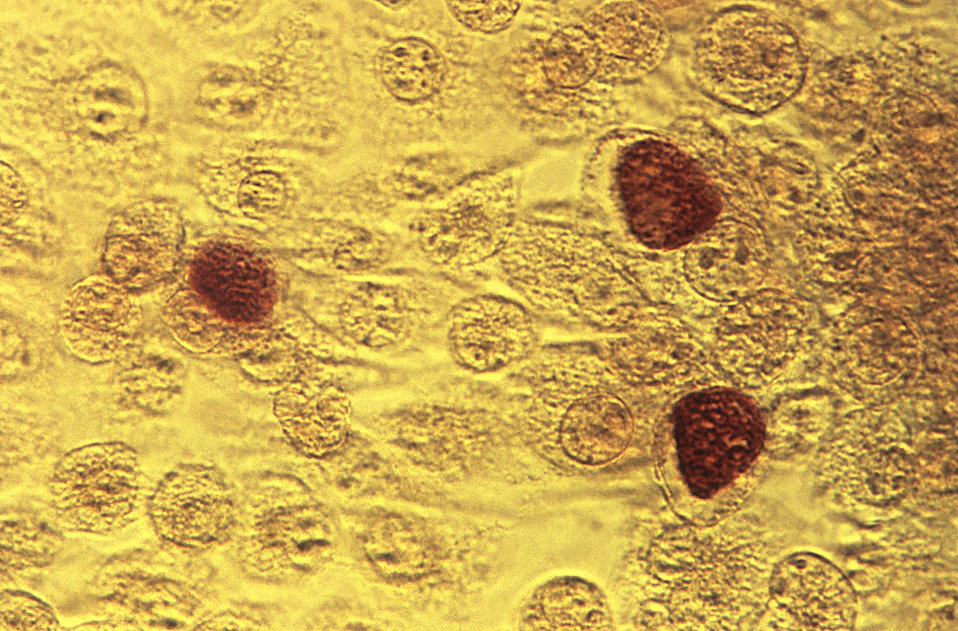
This photomicrograph reveals McCoy cell monolayers with Chlamydia trachomatis inclusion bodies; Magnified 200X.